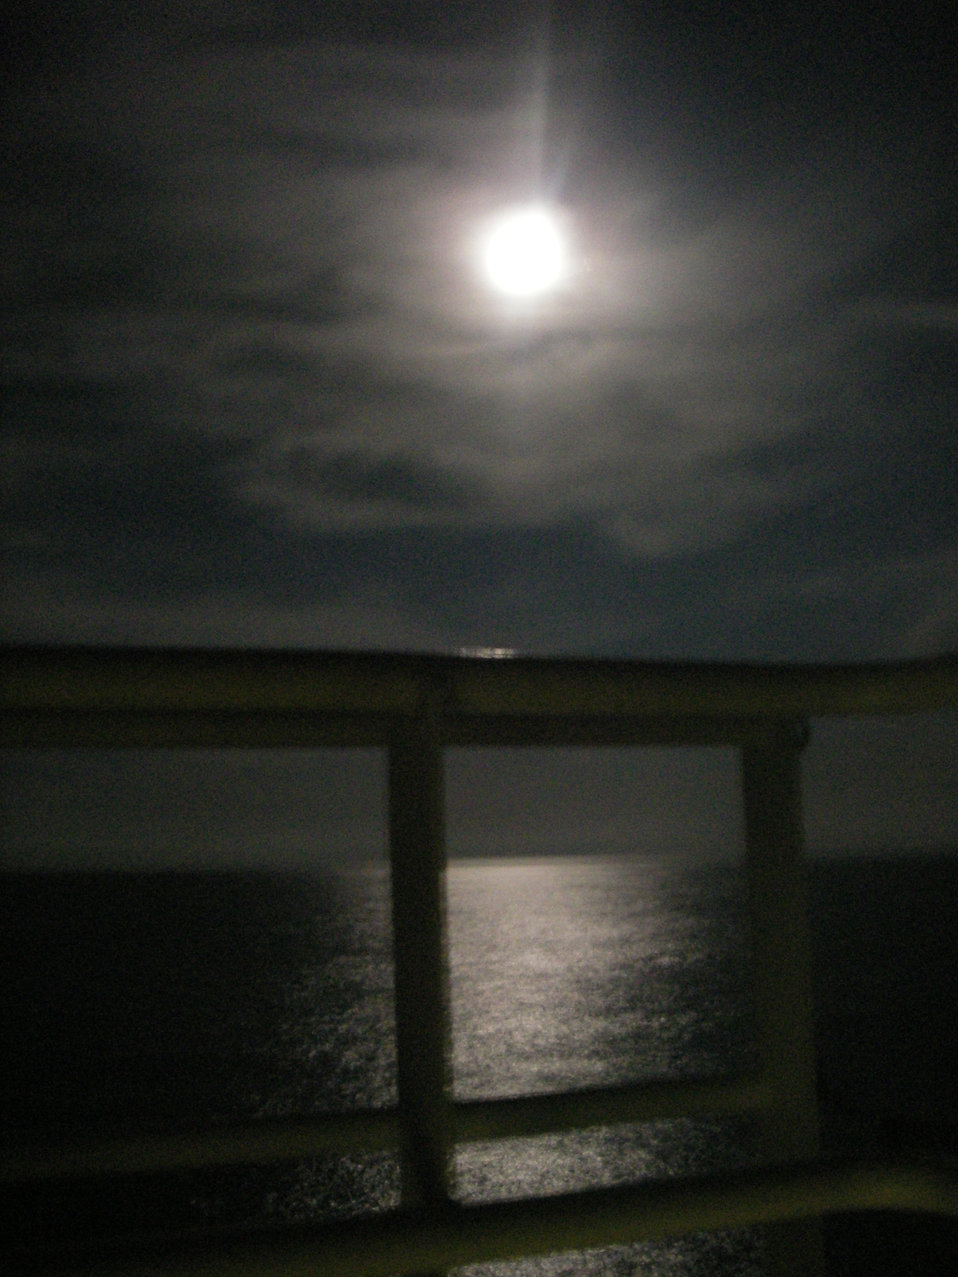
Light reflecting off a tropic sea